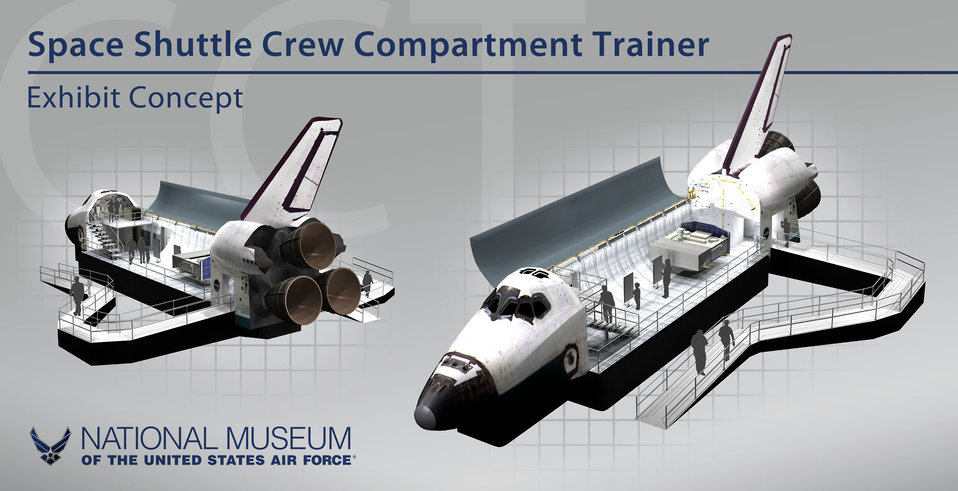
NASA's Crew Compartment Trainer

A conceptual drawing of the NASA Space Shuttle Crew Compartment Trainer exhibit at the National Museum of the U.S. Air Force at Wright-Patterson Air Force Base, Ohio. The CCT is a high-fidelity representation of the Space Shuttle Orbiter crew station that was used primarily for on-orbit crew training and engineering evaluations.